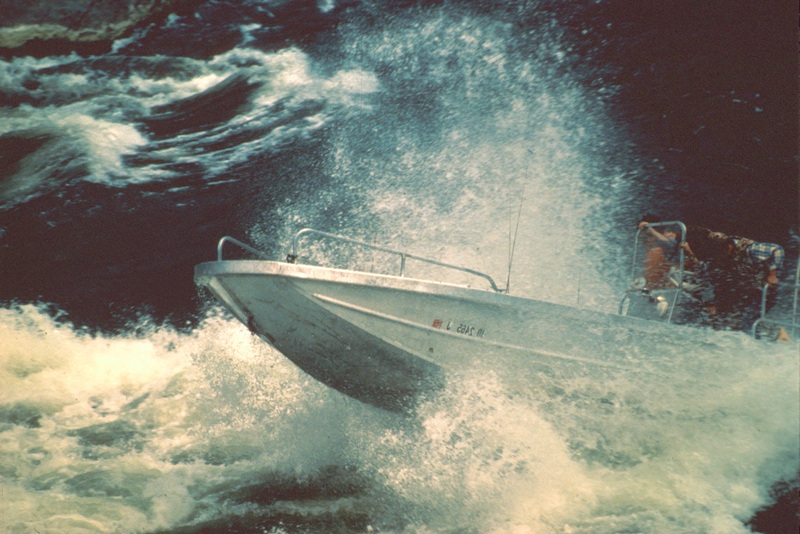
Jetboat UCSC Upper Columbia Salmon Clearwater District